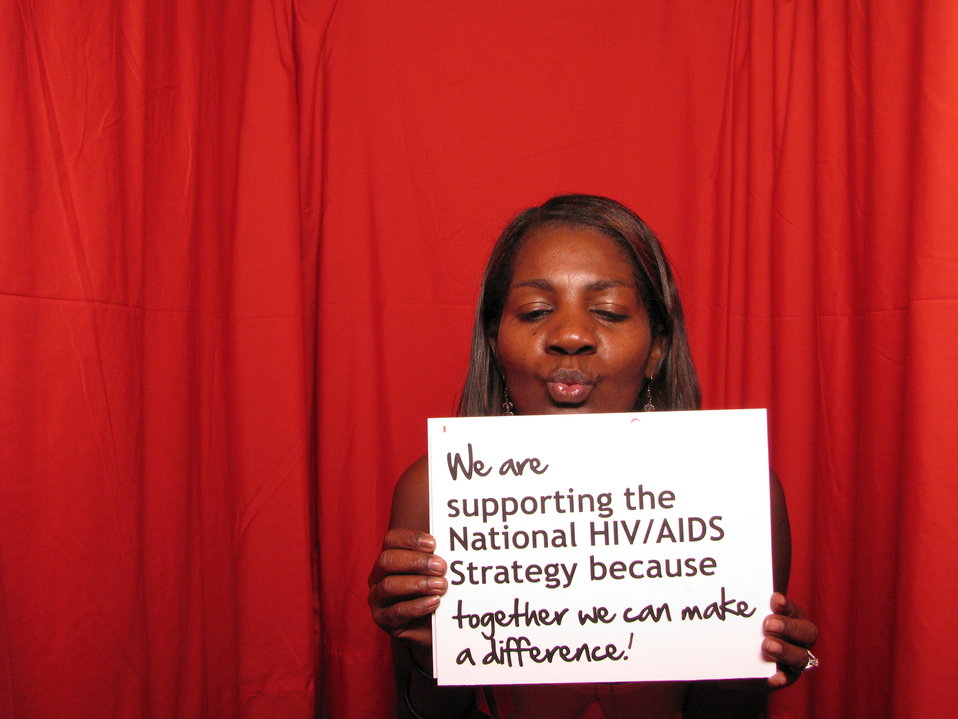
We are supporting the National HIV/AIDS Strategy because together we can make a difference.

From the AIDS.gov photo booth at the U.S. Conference on AIDS, September 2010 (Orlando, FL).